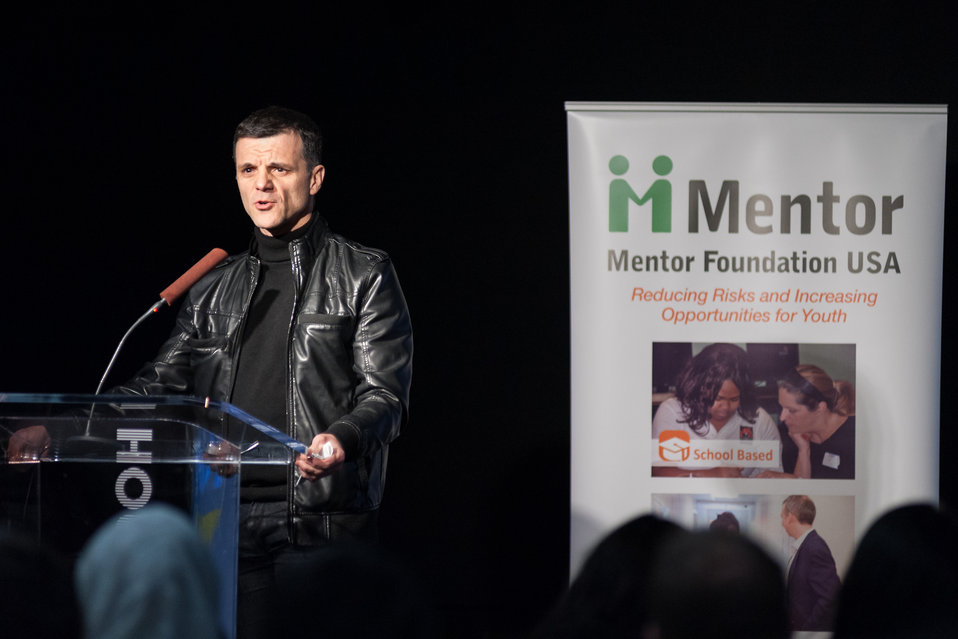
Mentor NDFW Event 2014

Mentor Foundation USA, in partnership with the National Institute on Drug Abuse (NIDA) and other key partners hosted a Youth Drug Facts Rally at the House of Sweden on Thursday, 30th January 2014. Approximately 200 students from five local high schools attended and had the opportunity to interact with top U.S. scientific experts, including Dr. Ruben Baler of NIDA and inspiring guest speakers to “shatter the myths” about drugs and substance abuse, while pledging to stay drug-free.